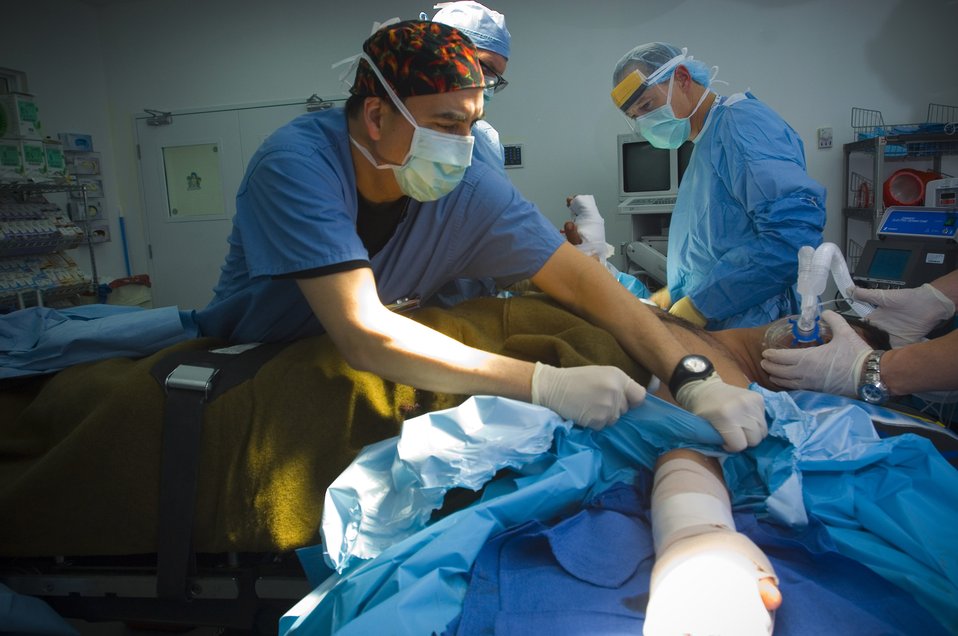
Combat Nurses: The OR --PART 2

Capt. George Moctezuma, an operating room nurse, removes a sterile field from a patient following a surgical procedure at the Air Force Theater Hospital here. Captain Moctezuma provides support to surgeons and technicians during operations to ensure they have the equipment they need and are able to safely perform procedures in a sterile environment. The captain is deployed from Wilford Hall Medical Center, San Antonio, Texas.